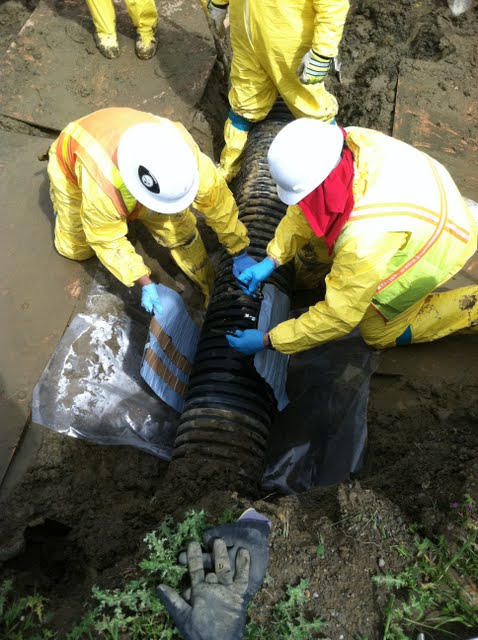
Recovery Act Supports Soil and Debris Cleanup, Groundwater Treatment at SLAC

Recovery Act workers are on track to remove more than 30,000 cubic yards of contaminated soil and debris at the SLAC National Accelerator Laboratory by September 2011.
The Recovery Act invested $14.3 million in legacy cleanup activities at SLAC. In addition to removing contaminated soil and debris that is shipped to local disposal facilities, Recovery Act workers installed three new groundwater treatment systems.